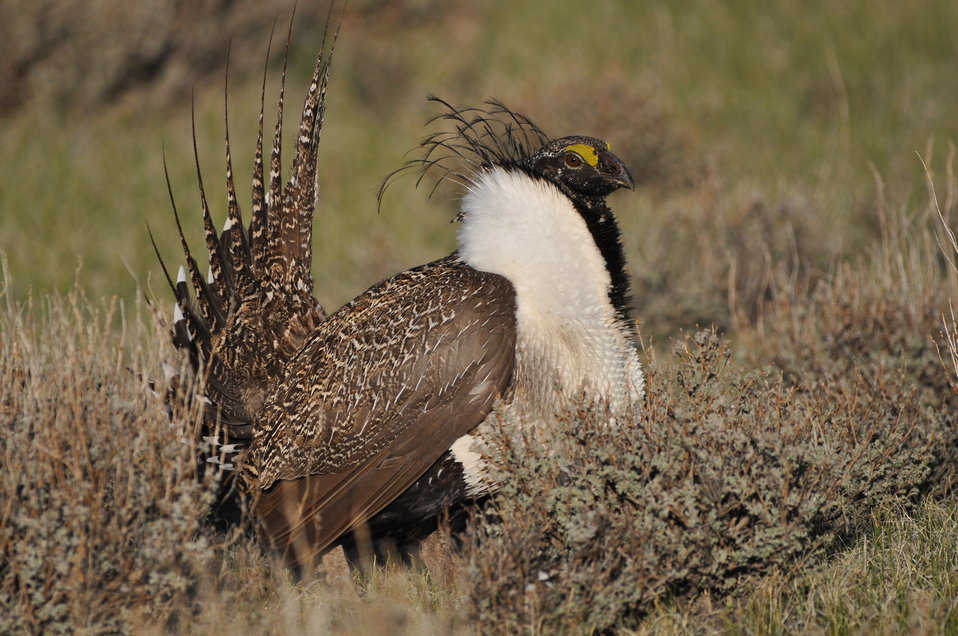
Greater Sage-Grouse

Photo Credit: Jeannie Stafford/USFWS
A greater sage-grouse male struts at a lek (dancing or mating ground) near Bridgeport, CA to attract a mate.